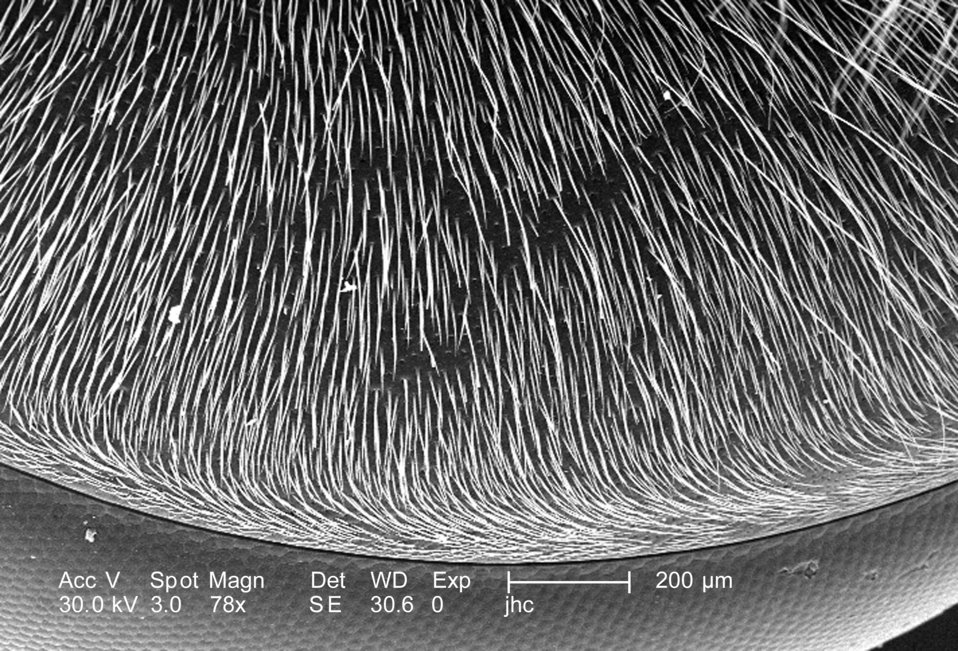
Under a low magnification of 78X, this scanning electron micrograph (SEM) depicted the surface of the left compound eye of an unidentified hornet found in the suburbs of Decatur, Georgia. At this point, the eye was attached to the 'setae'-covered head. This eye was one of a pair, which along with other sensorial structures such as these hair-like 'setae', provided the hornet with data indicative of changes encountered in its environment such as chemical, thermal, and tactile queues.